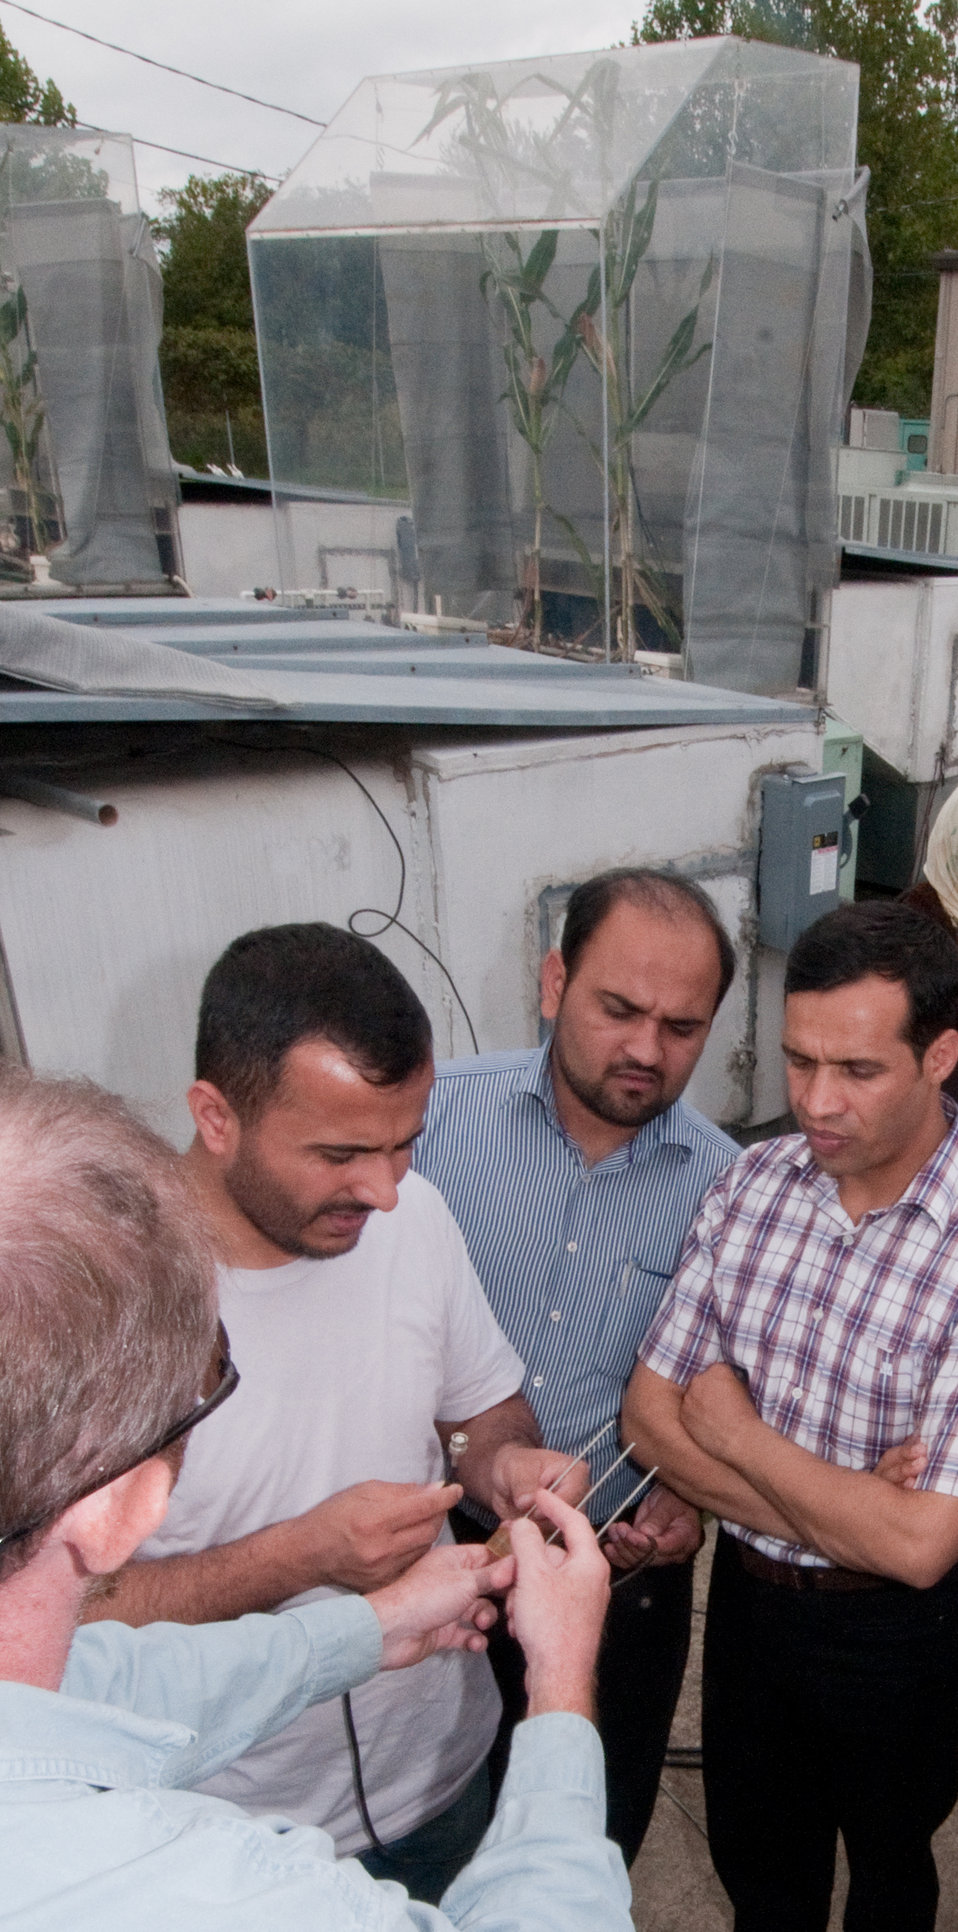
U.S. Department of Agriculture (USDA), Agriculture Research Service's Jackson Fisher (left), shows a moisture probe to 12 Borlaug Fellows from Afghanistan’s Ministry of Agriculture, Irrigation and Livestock (MAIL) during their tour of the Global Climate Change Lab and the Soil Plant Atmosphere Research (SPAR) units (seen in the background), in Beltsville, MD, on Wednesday, September 21, 2011. SPAR units provide precise control of the major environmental variables influencing crop growth including temperature, humidity, and atmospheric carbon dioxide concentration. The SPAR units are fully automated to measure crop canopy gas exchange including photosynthesis, respiration, transpiration and water use efficiency.